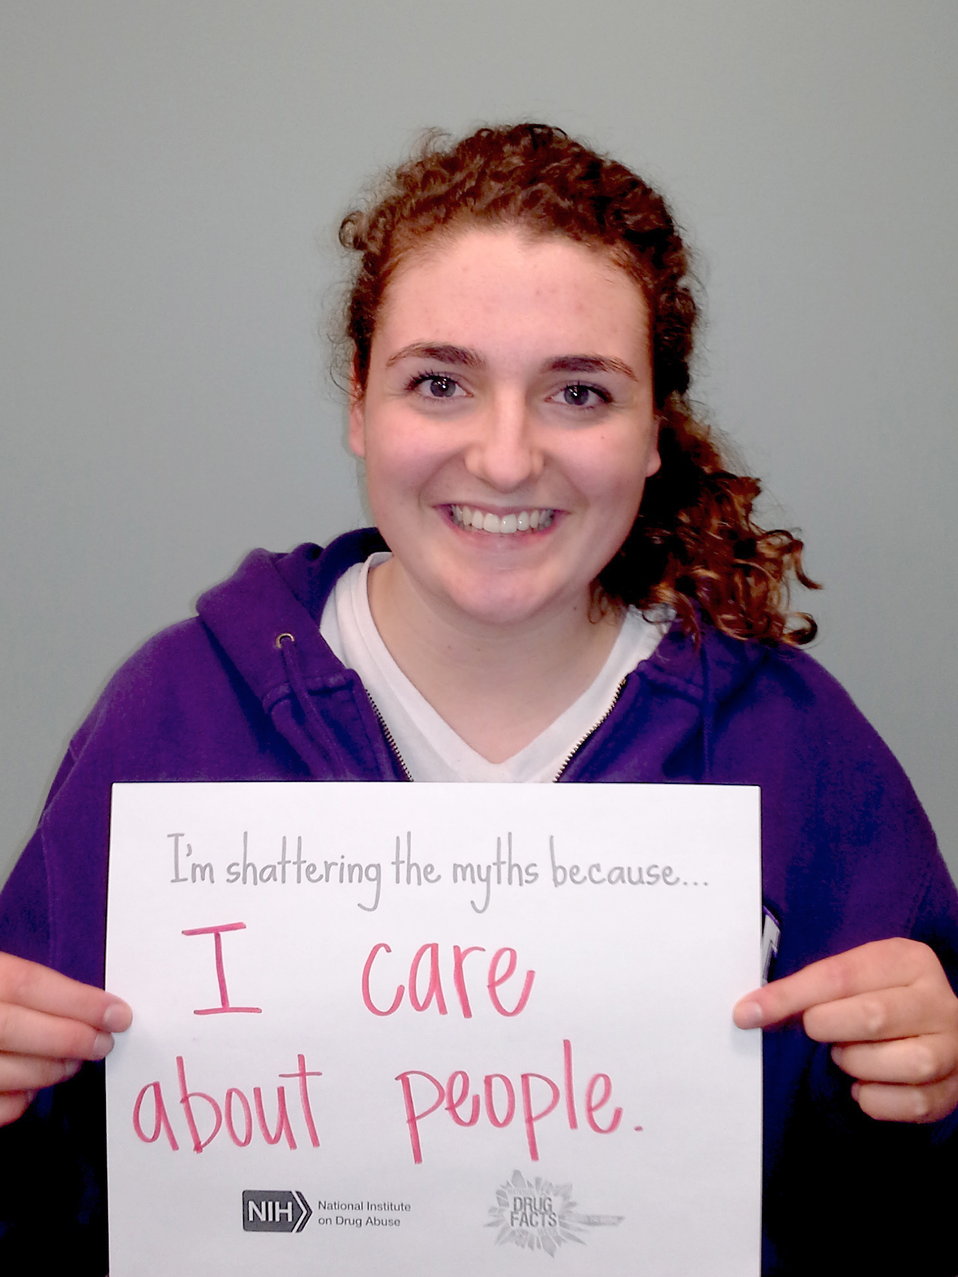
Shattering the Myths campaign in Winona, Minnesota